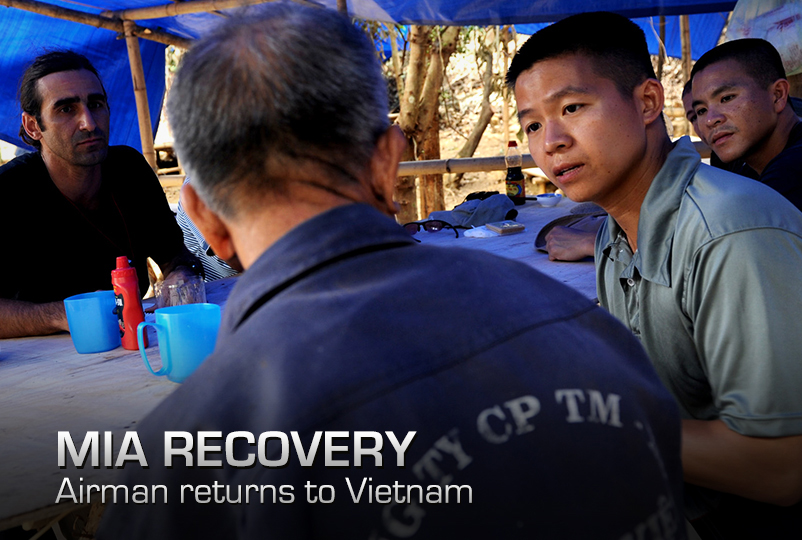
Airmen returns to Vietnam

Photo cutline